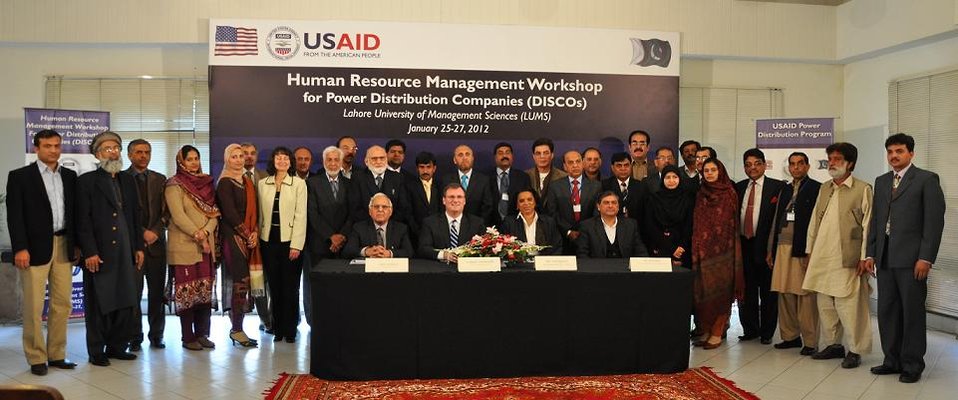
Workshop participants from DISCOs with Chief Guest Gail Spence (Deputy Director USAID Punjab)